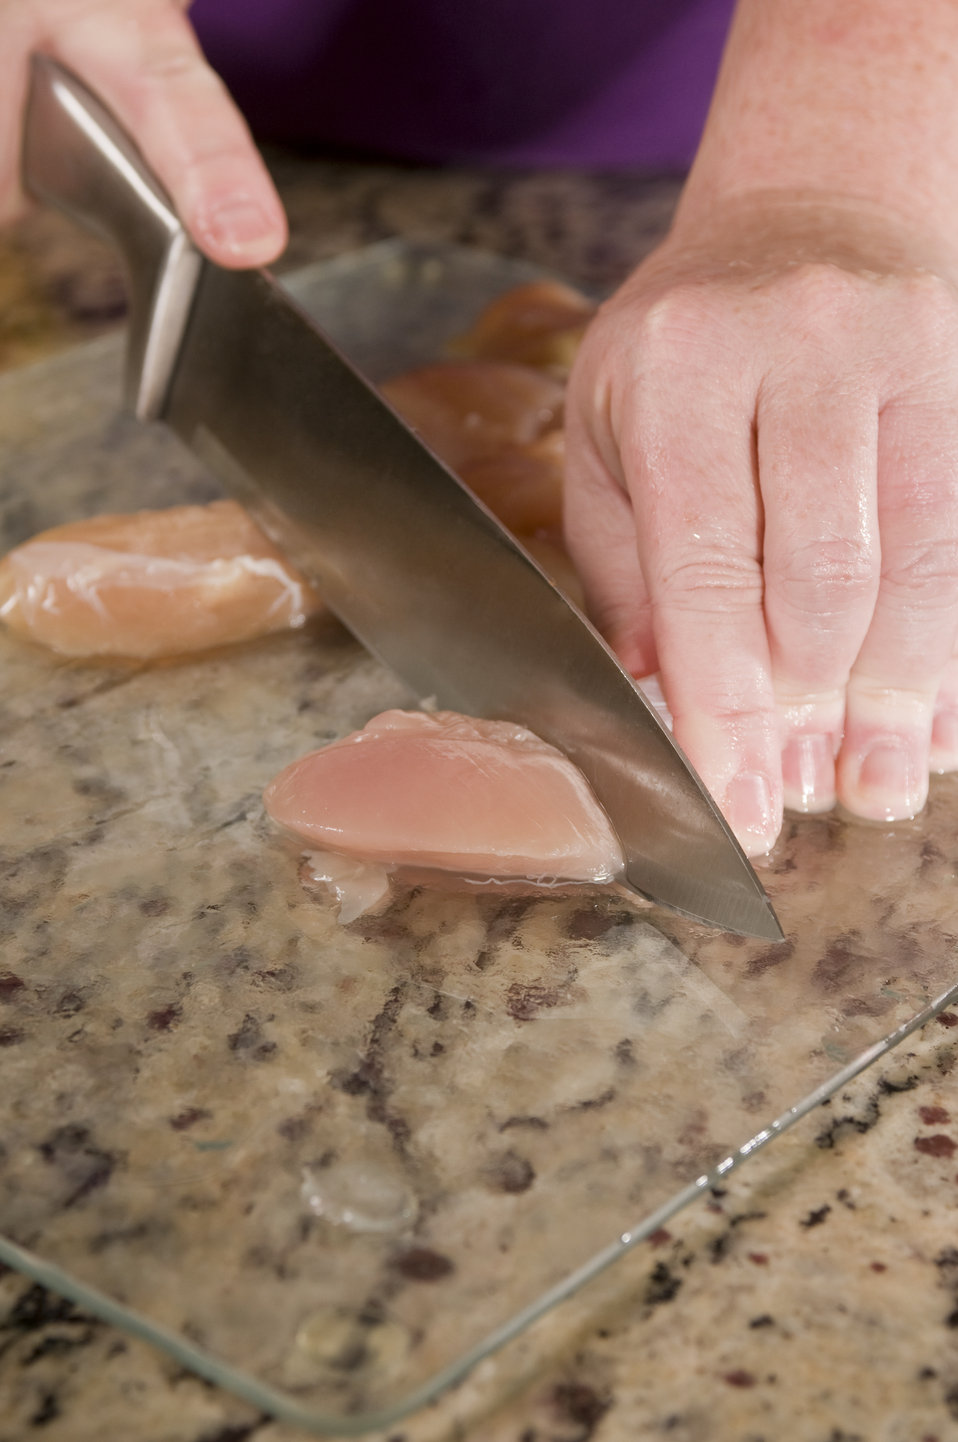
Here we see the hands of a cook in the process of cutting some newly-purchased deboned chick breast meat atop a glass cutting board, which was seated on kitchen sink countertop, just prior to adding various seasonings.